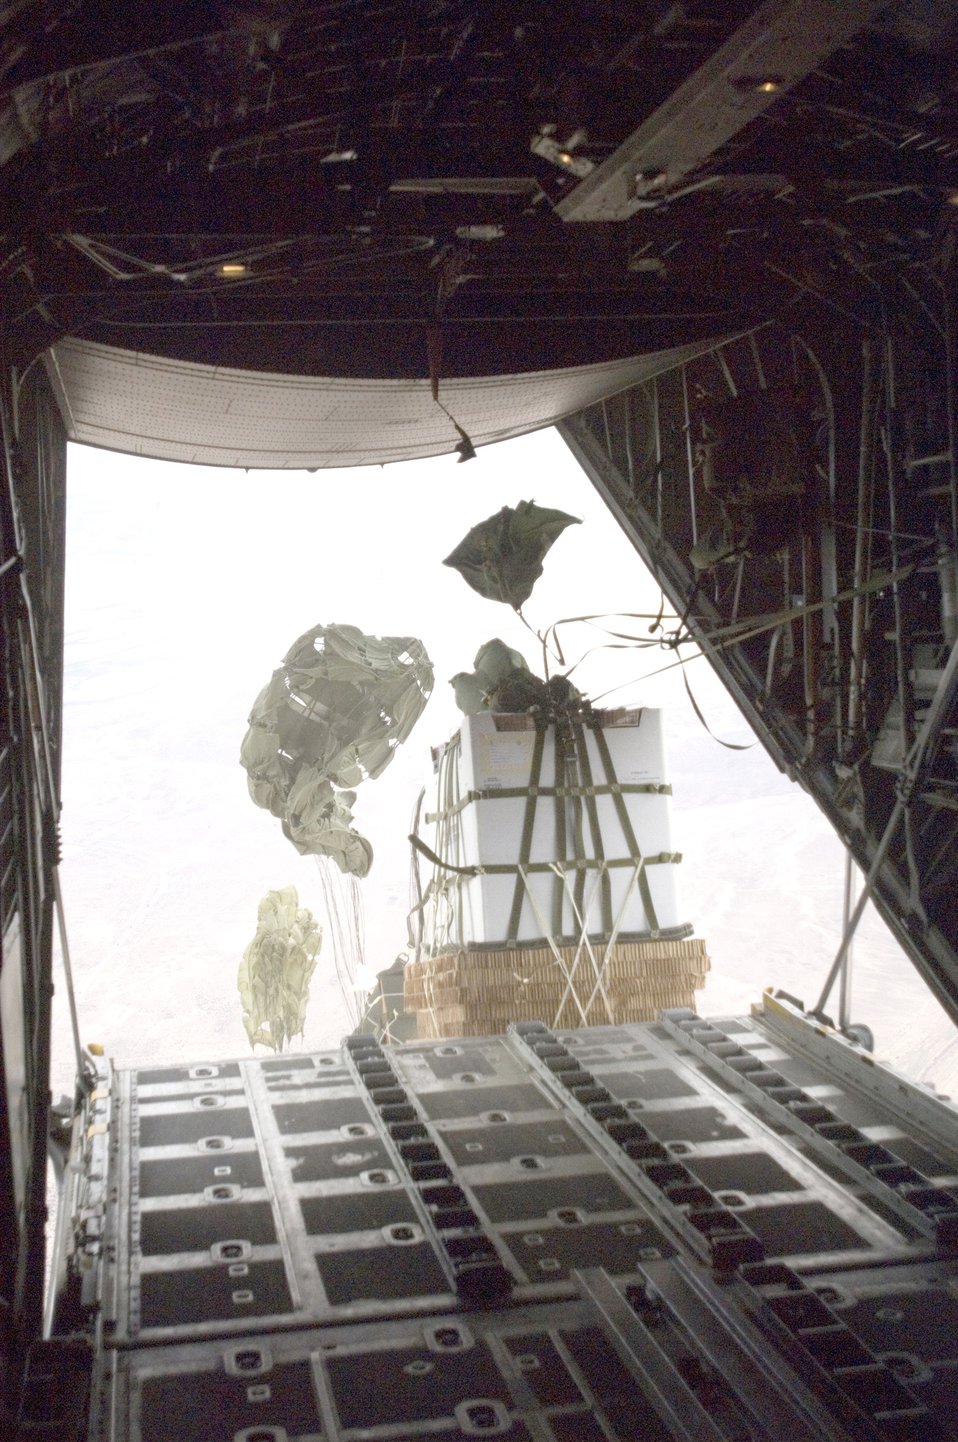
First JPADS airdrop over Iraq a success

Six 1,200-pound Improved Container Delivery System bundles of water and Meals, Ready to Eat are dropped off a C-130 Hercules to support the Army's 82nd Airborne Division in Iraq Feb. 16. This mission marked the first time the Air Force employed the Joint Precision Airdrop System in combination with the I-CDS to support Operation Iraqi Freedom. The aircrew is assigned to 777th Expeditionary Airlift Squadron.